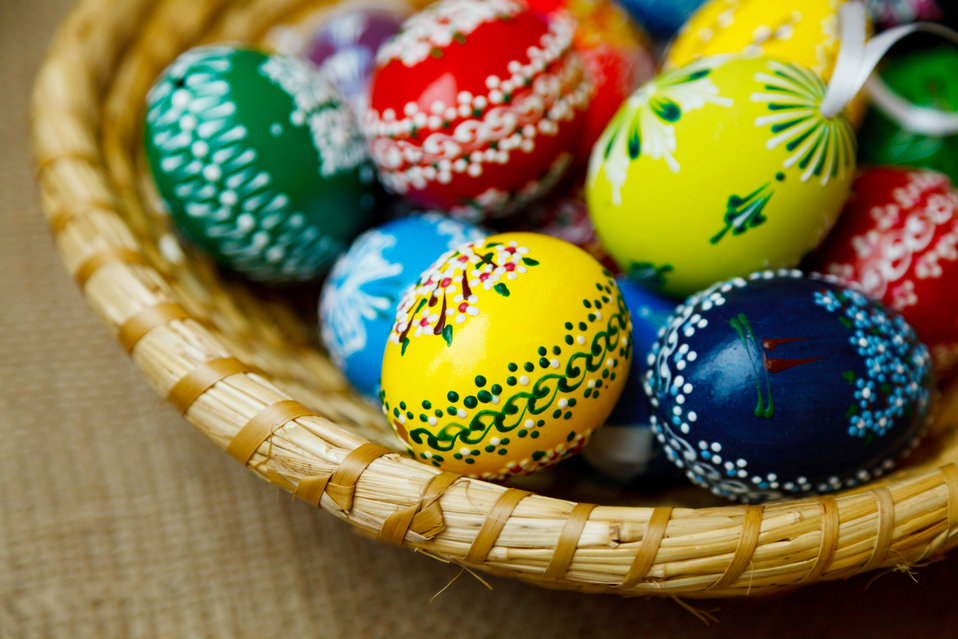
Traditional easter eggs

Traditional hand painted easter eggs in a basket.